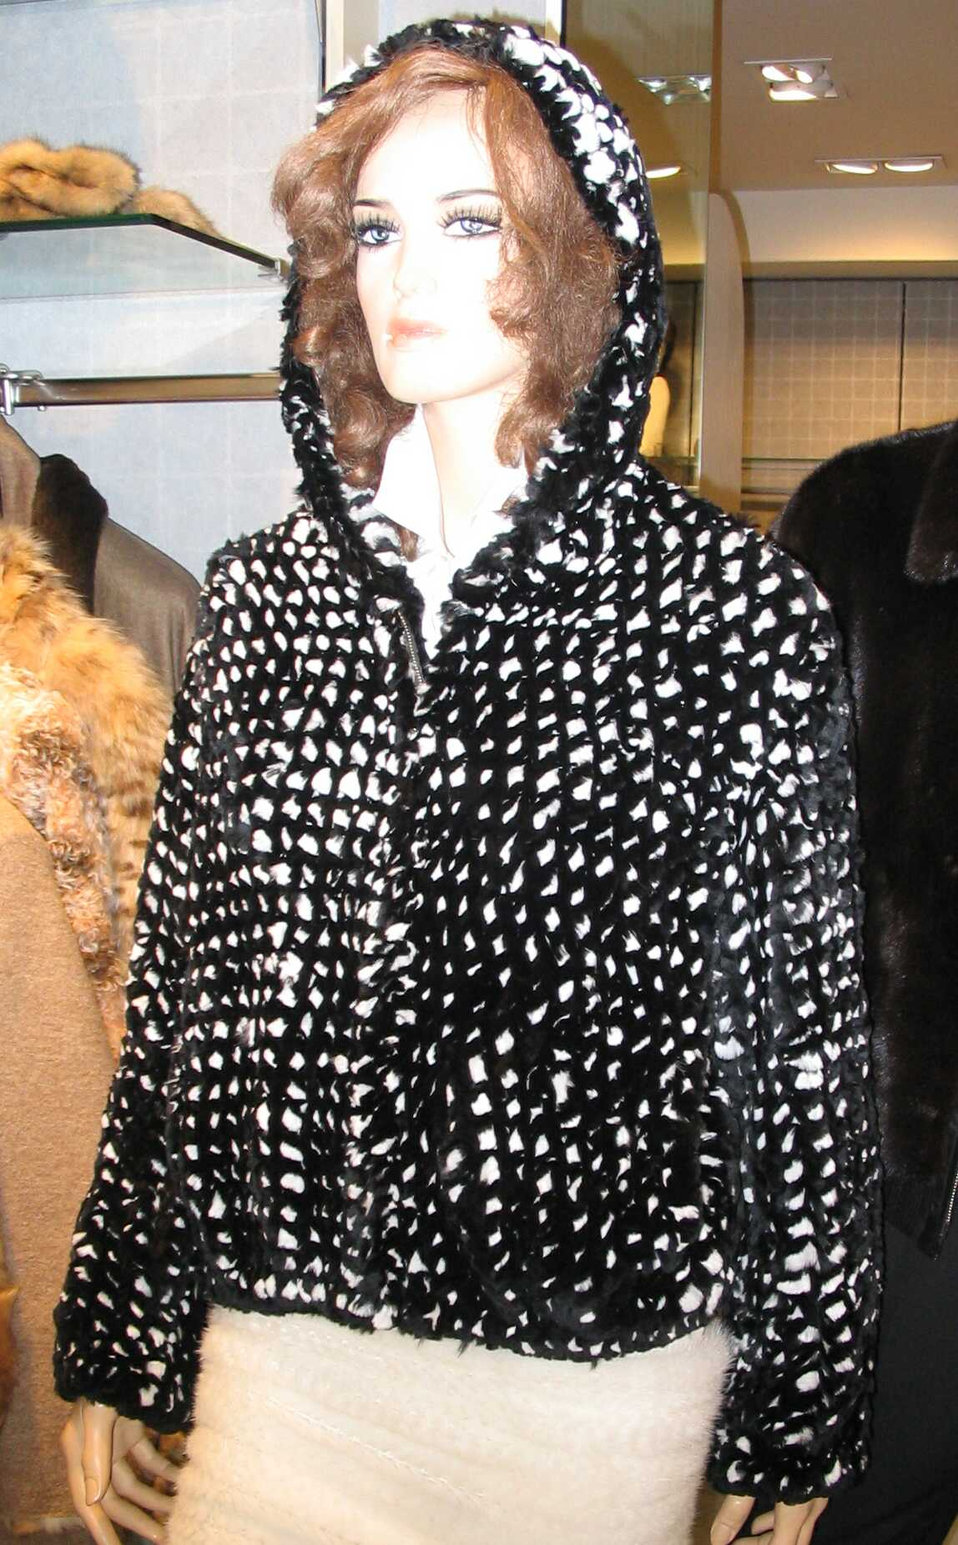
Deutsch: Geflochtene Kaninjacke, hergestellt in China. Twisted rabbit jacket, made in China.